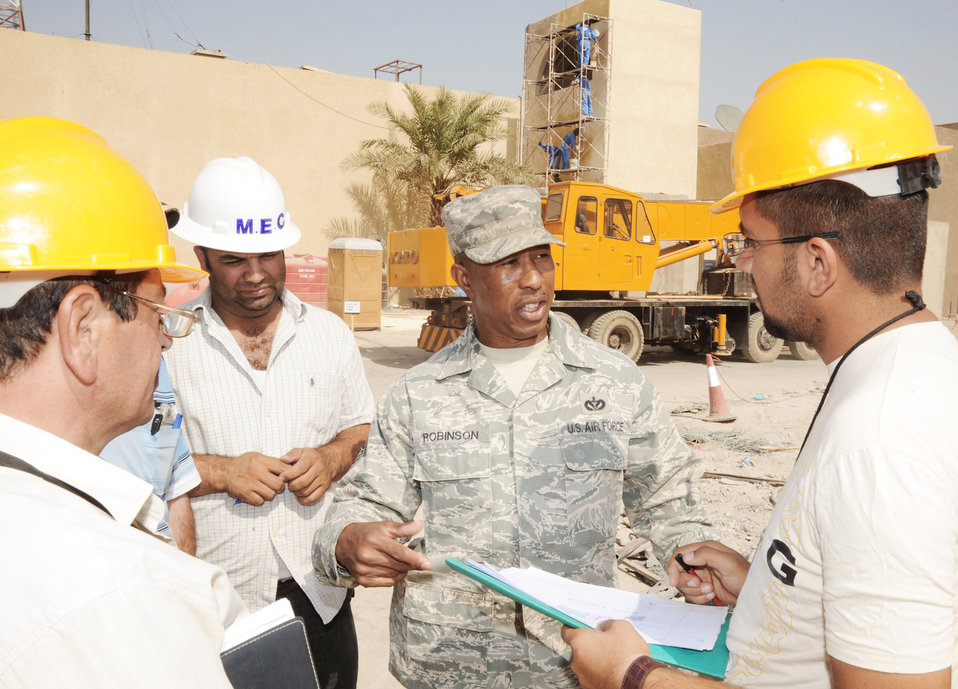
Servicemembers hammer out, nail down Iraqi construction

Master Sgt. Tommy Robinson coordinates with Iraqi contractors responsible for construction projects located in the International Zone Oct. 18, 2009, in Baghdad, Iraq. Sergeant Robinson is responsible for ensuring contractors follow contract agreements, safety rules and national electric codes. He is the joint area support group department of public works Team 2 NCO in charge deployed from Luke Air Force Base, Ariz. He is a native of Graceville, Fla.